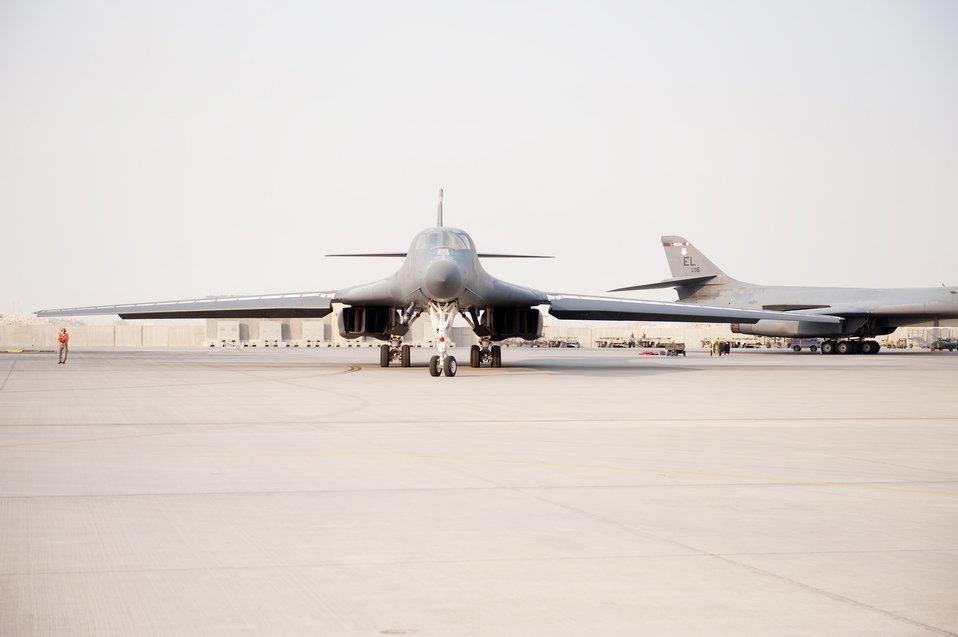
Checking out the B-1B for combat

Staff Sgt. Daniel Gordon marshals a B1-B Lancer as it taxis at an air base in Southwest Asia before a combat mission Nov. 11, 2009. The multi-mission B-1 is the backbone of America's long-range bomber force. Sergeant Gordon is with the 37th Aircraft Maintenance Unit.